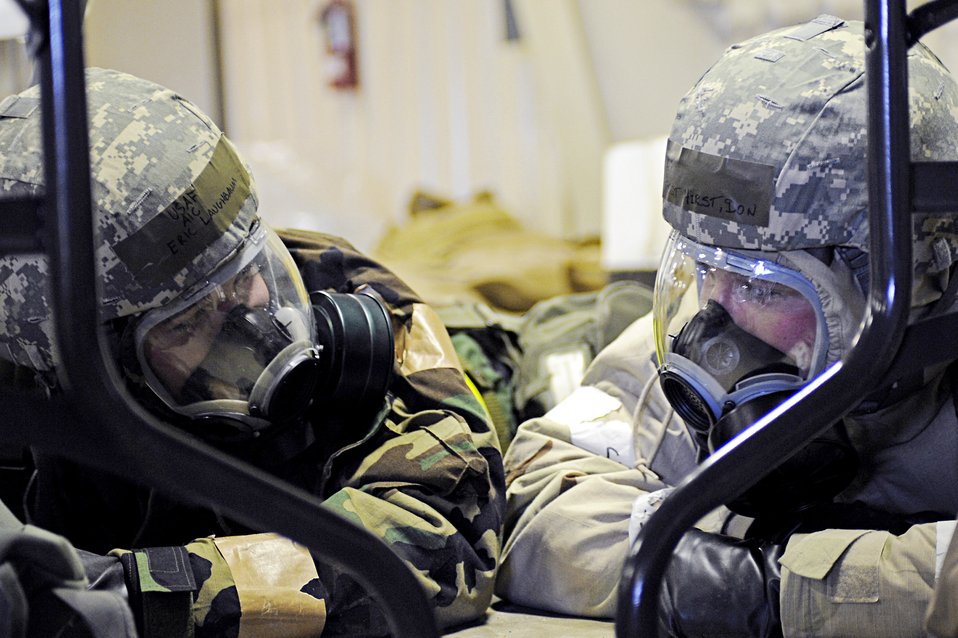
Alarm duck and cover

Airman 1st Class Eric Laughbaum (left) and Tech. Sgt. Don Hirst take cover after an alarm red is sounded during a Phase II operational readiness exercise at Ellsworth Air Force Base, S.D., March 2, 2010. The Airmen are with the 28th Logistics Readiness Squadron.